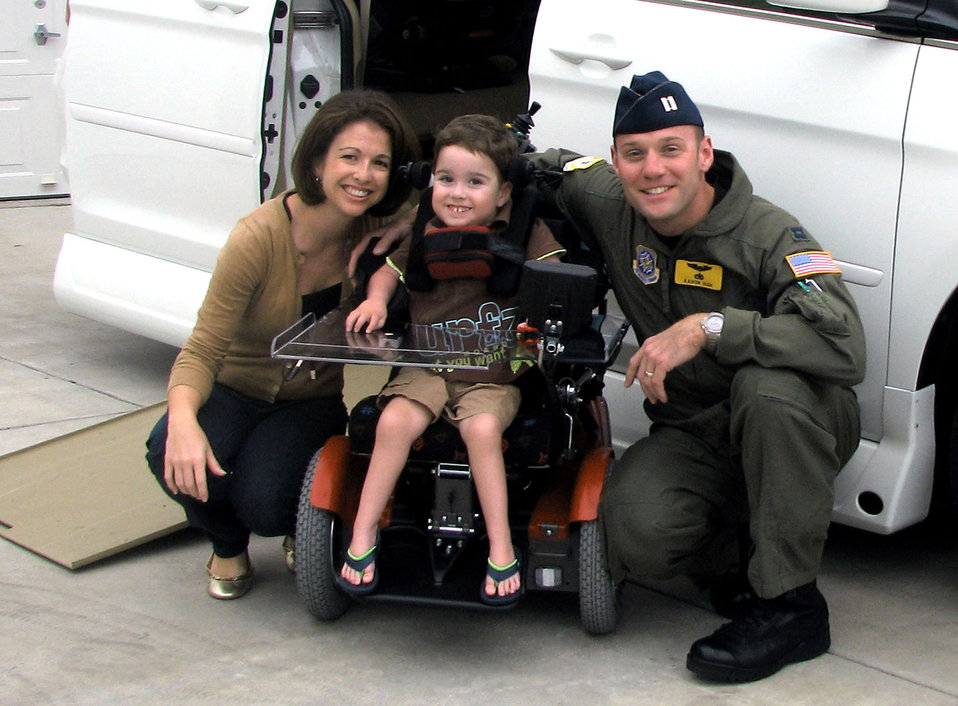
Air Force Aid helps family provide ?Hope for Max?

Capt. Aaron High, his wife Traci and son Max join for a photo outside their home on his third birthday, Nov. 9, 2009, at Joint Base Charleston S.C. At 10 months old, Max was diagnosed with spinal muscular atrophy.